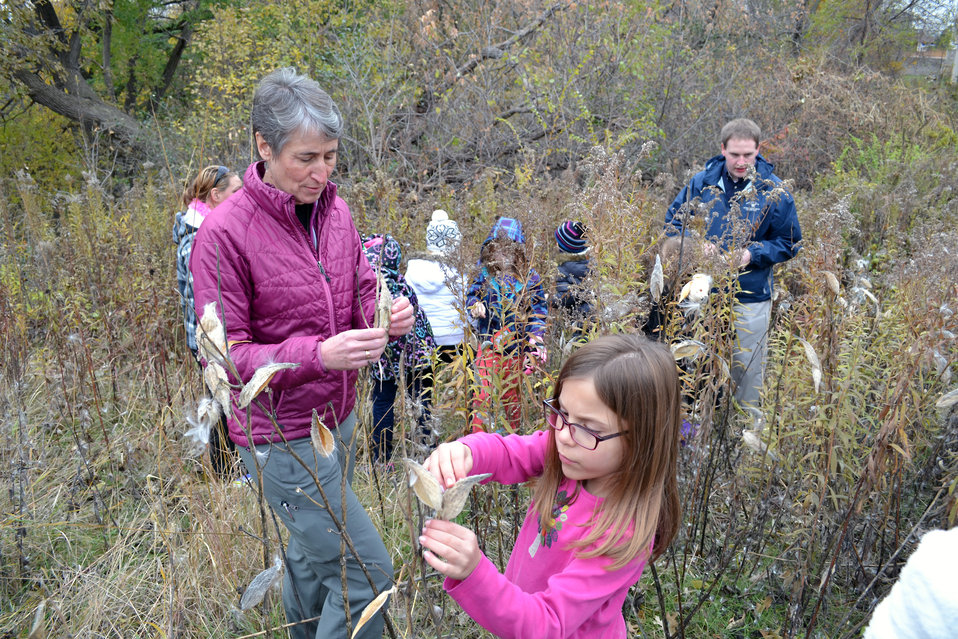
Milkweed Seed Collection

Secretary Sally Jewell helped Minneapolis second graders collect native prairie seeds during her visit to Minnesota Valley National Wildlife Refuge.